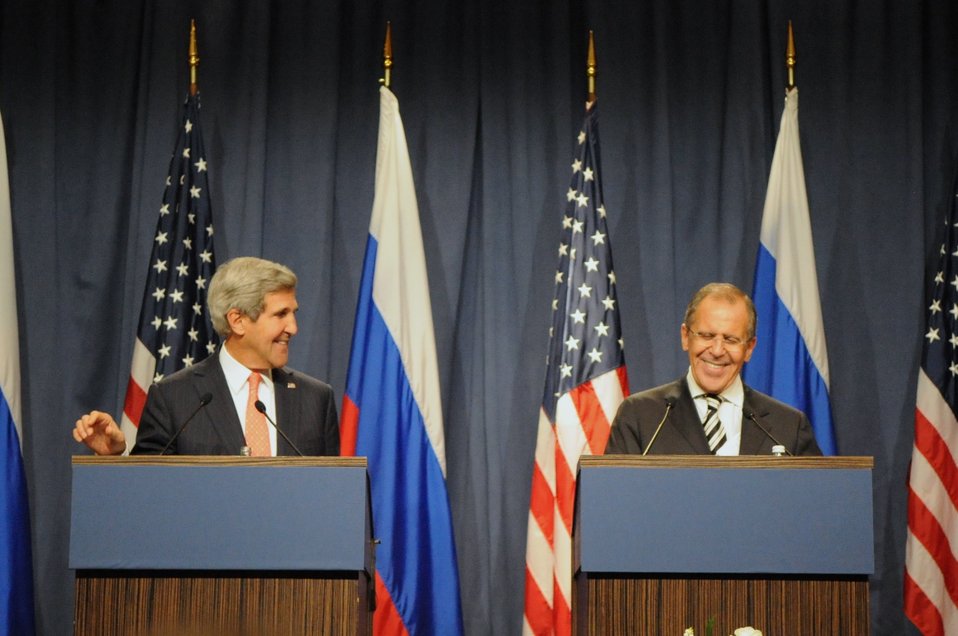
Secretary Kerry and Foreign Minister Lavrov Hold a News Conference

U.S. Secretary of State John Kerry and Russian Foreign Minister Sergey Lavrov share a laugh during a news conference held after the two finalized a framework for the elimination for Syrian chemical weapons in Geneva, Switzerland, on September 14, 2013.